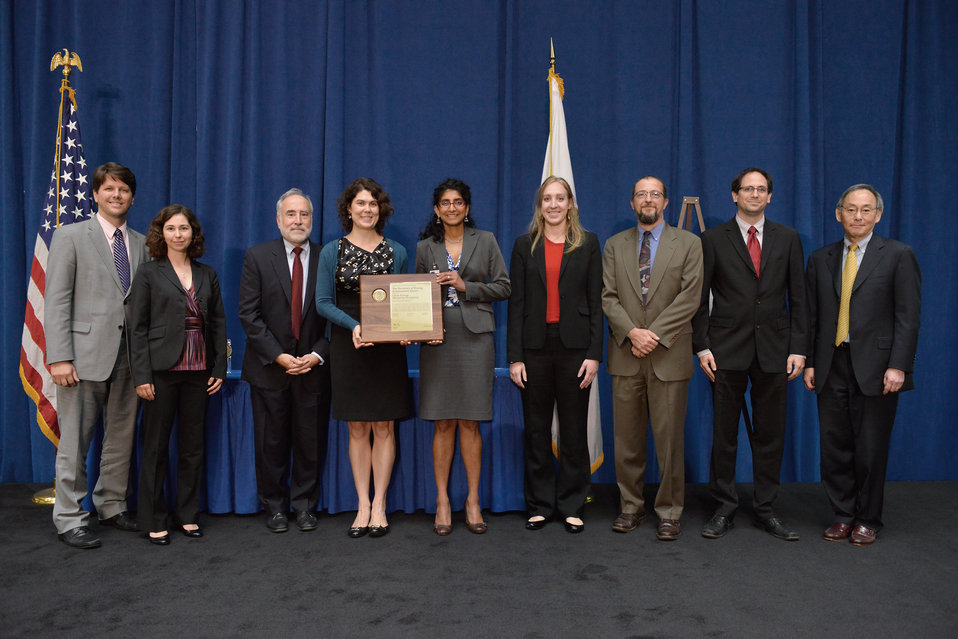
Clean Energy Ministerial

Awardees (not all pictured): Russell L. Conklin, Gabrielle Dreyfus, Mark D. Friedrichs
Arne Jacobson, Caroline J. McGregor, Graham M. Pugh, Kavita Ravi, Christie M. Ulman, Robert van Buskirk, Matthew Wittenstein, Jacqueline Wong. In recognition for contributions to the team that served as the Secretariat for the Clean Energy Ministerial. This dialog has accelerated the global transition to clean energy technologies through active peer-to-peer cooperation to implement the policies and programs needed to scale up private investment in efficient and low-carbon energy solutions. The level of their expert knowledge of technologies, policies and diplomatic process were critical to the success of this important international clean energy diplomacy endeavor.